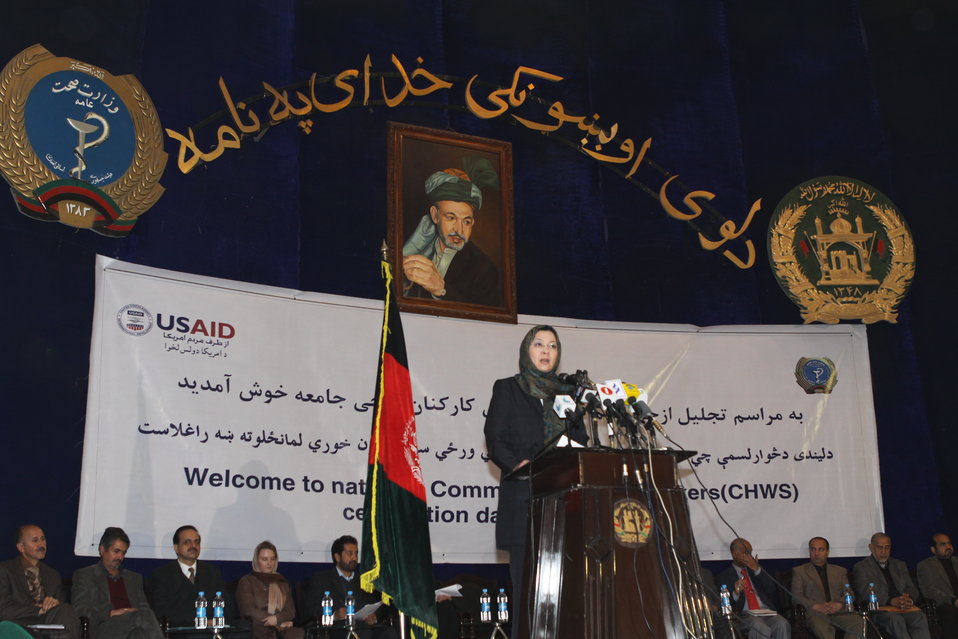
Community Health Workers Celebrated

Kabul, Afghanistan | December 5, 2010 — In support of the United Nations designated International Volunteer Day for Economic and Social Development, Afghanistan’s Ministry of Public Health celebrated its annual Community Health Worker Day today. Acting Minister of Public Health Dr. Suraya Dalil, USAID Senior Deputy Mission Director Robert Hellyer, other government officials, and international donors joined in recognizing the critical contribution of community health workers in Afghanistan and encouraging them to continue their voluntary support to their communities.
The event praised the contributions of the more than 22,000 volunteers throughout the country who deliver community level health-education, counseling, and services out of village health posts located in private homes. The Ministry of Public Health envisioned that community-based healthcare programs will actively encourage communities and families to adopt healthy lifestyles and behaviors, and provide families access to high quality and socially acceptable preventative medicine and life-saving services.
“We have 22,000 community health workers in Afghanistan that are able to implement the basic and standard medicines. They all have been trained through a job description,” said Minister Dalil. Addressing the health workers, she added, “I am proud and feel powerful that I have people like you.”
USAID-funded health projects collaborate closely with the Ministry of Public Health to improve the health and nutritional status of Afghans, provide quality primary healthcare, and promote healthy behaviors at the community and household-levels. USAID supported the training of more than 9,000 of the volunteer community health workers currently working in Afghanistan.
“On behalf of the American people, I congratulate the Community Health Workers for their diligence to gain the skills and knowledge necessary to serve their communities in this important role,” said USAID Senior Deputy Mission Director Hellyer. “USAID strongly supports community based health care and believes that quality community-based health services are essential to reaching Afghanistan’s Millennium Development Goals.”
To support the Basic Package of Health Services, USAID assisted in developing the community health worker training manual, helped train community health worker supervisors and master-trainers, facilitated in-service training, and produced and developed reporting tools, job aids, and education materials.